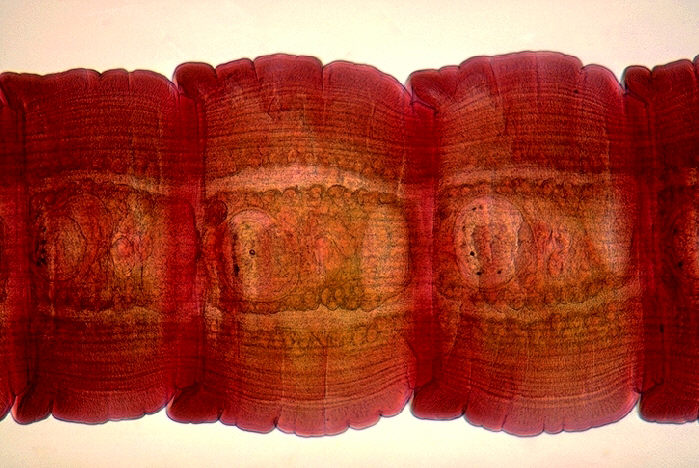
Anterior chain of Mesocestoides sp.